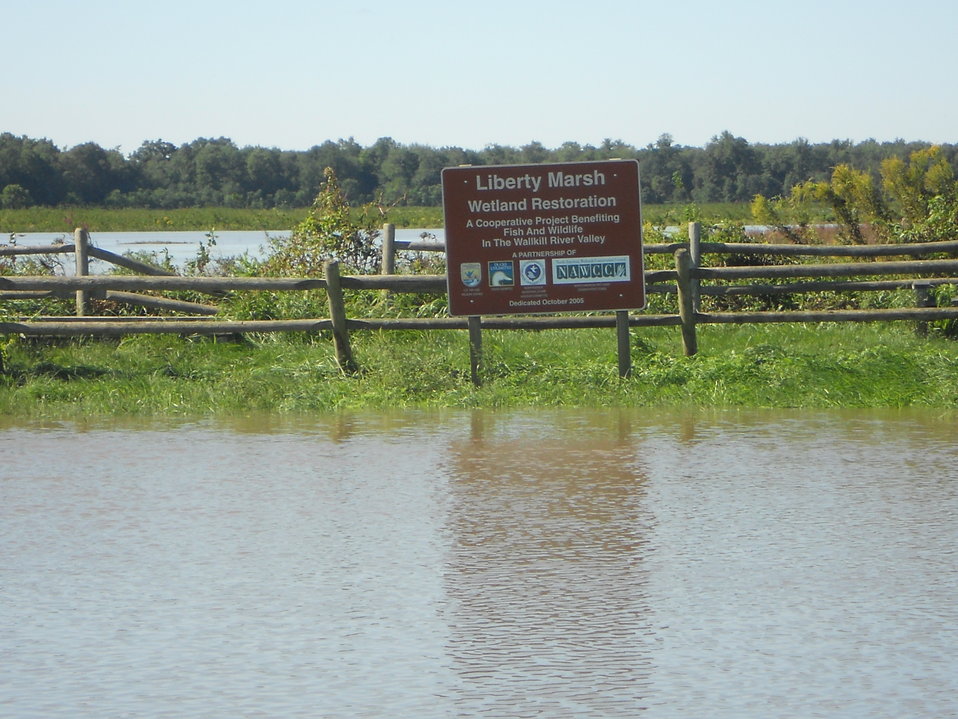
Flooding at WallKill River Refuge

Wallkill River National Wildlife Refuge, Sussex, N.J. Post-Irene flooded Liberty Loop impoundments and trail. Meagan Racey/USFWS